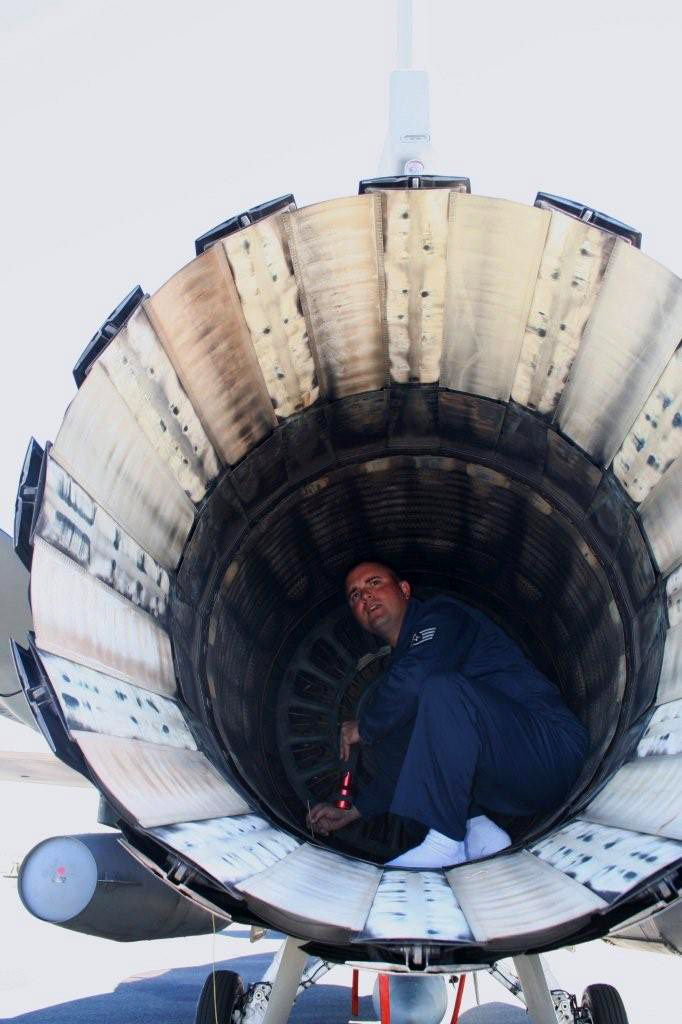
Maintaining in Australia

Staff Sgt. Justin Mollahan cleans a heat sensor in the engine of an F-16 Fighting Falcon March 26 at Avalon Airport in Victoria, Australia. Pacific Air Forces Airmen and aircraft showcased American air power at the Australian International Airshow '07. Sergeant Mollahan is an engine specialist with the 35th Aircraft Maintenance Squadron at Misawa Air Base, Japan.